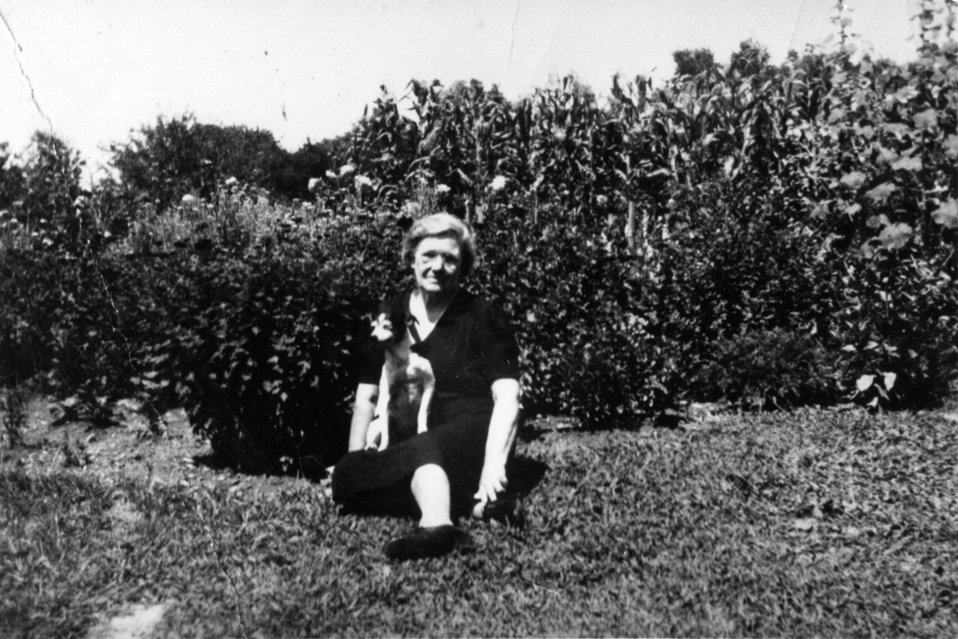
Early settlers at Oak Ridge